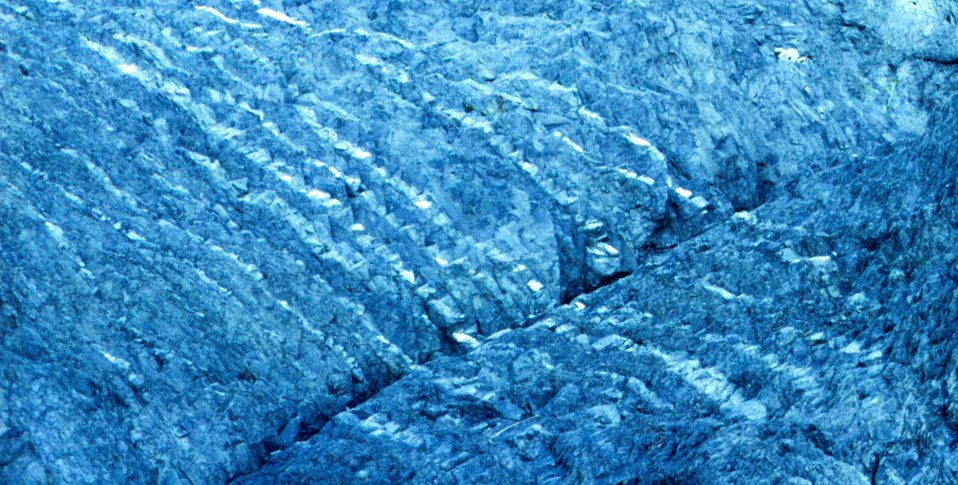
Banded vertical layers of gneiss near Port Etches.